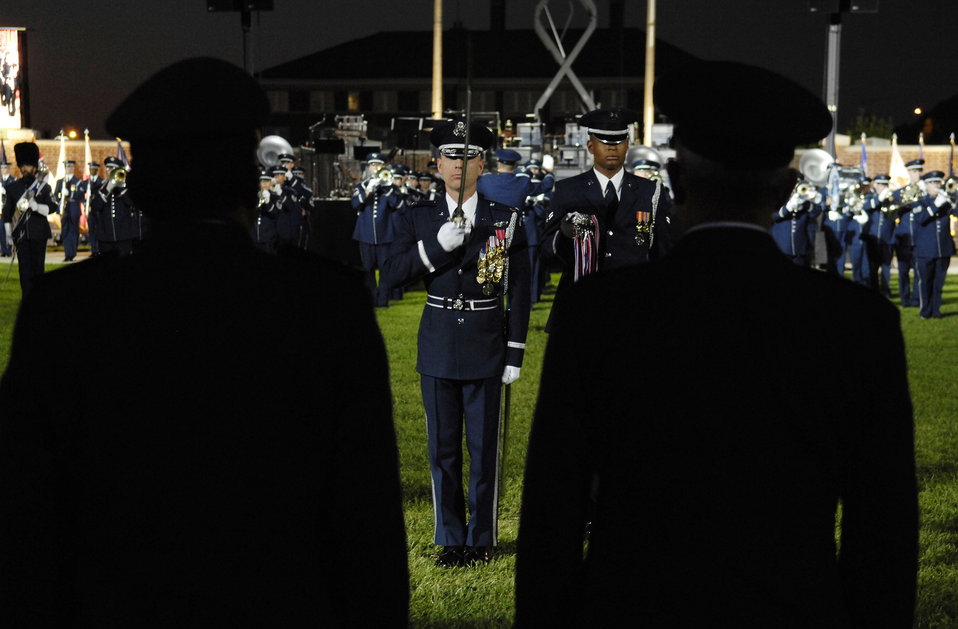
Air Force Tattoo

Lt. Col. Todd Taylor salutes the reviewing officials during the 2007 Air Force Tattoo Sept. 23 at Bolling Air Force Base, D.C. The 2007 Air Force Tattoo, titled